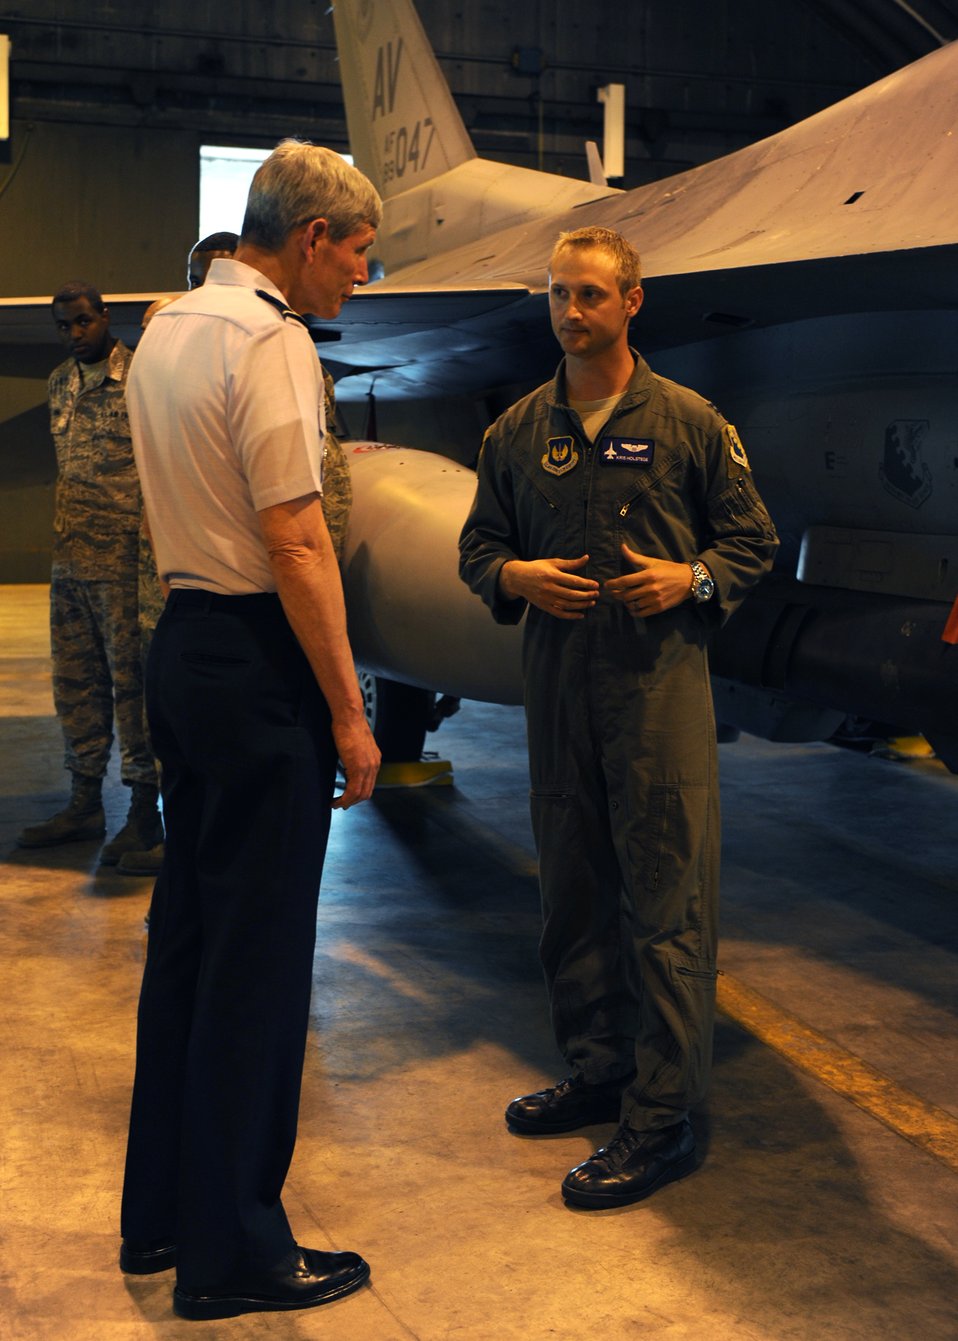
Chief of staff and spouse visit Aviano Air Base

Capt. Kristopher Holstege talks with Air Force Chief of Staff Gen. Norton Schwartz on July 11, 2011, at Aviano Air Base, Italy. The general and his wife Suzie were visiting Aviano to meet with Airmen and their families and observe the installation’s mission. Holstege is the 510th Fighter Squadron chief of plans.